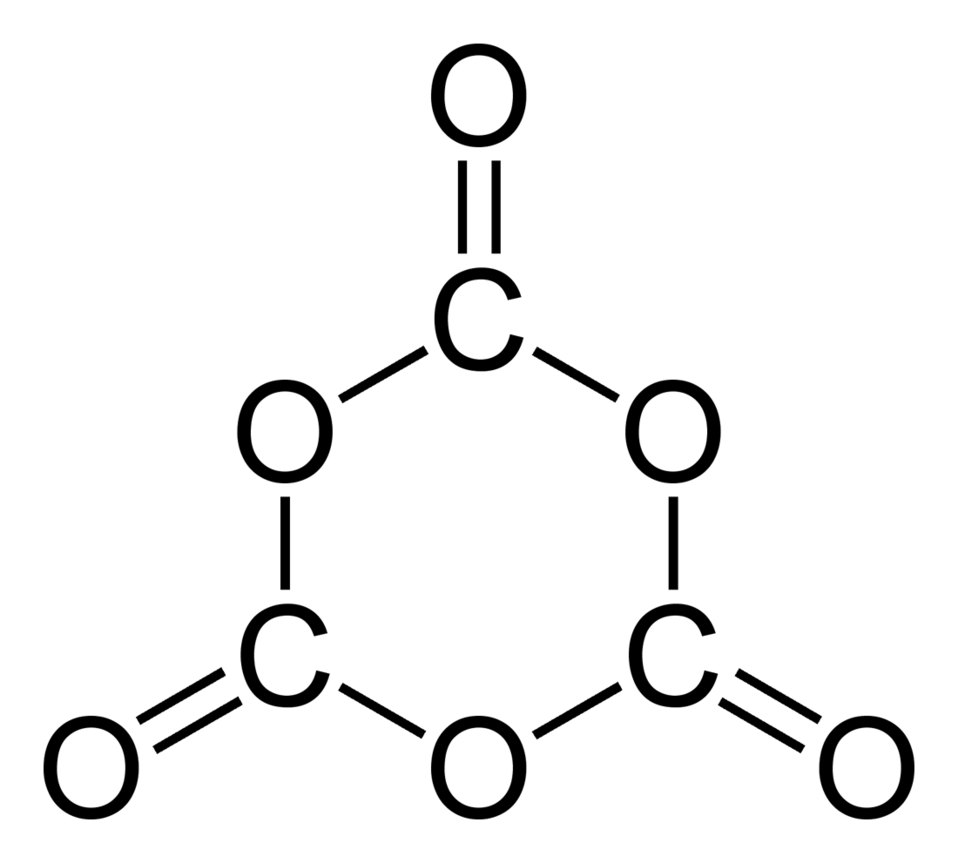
Structural formula of the 1,3,5-trioxanetrione molecule, C3O6. Structure drawn in ChemDraw Ultra 11.0.